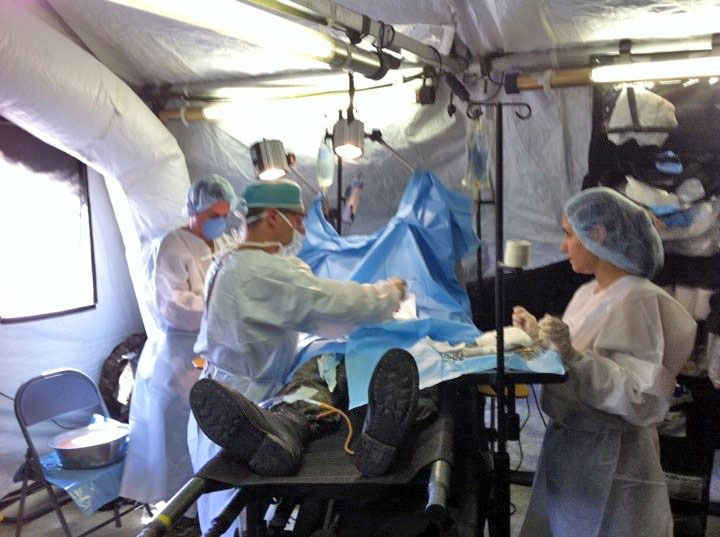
Medics train with Armenian military.

A team of Armenian surgeons simulates a field surgery in an expeditionary medical support system during a three-day exercise Sept. 3, 2010, near Zarh, Armenia. It was the first time the Armenian military had deployed EMEDS to the field.